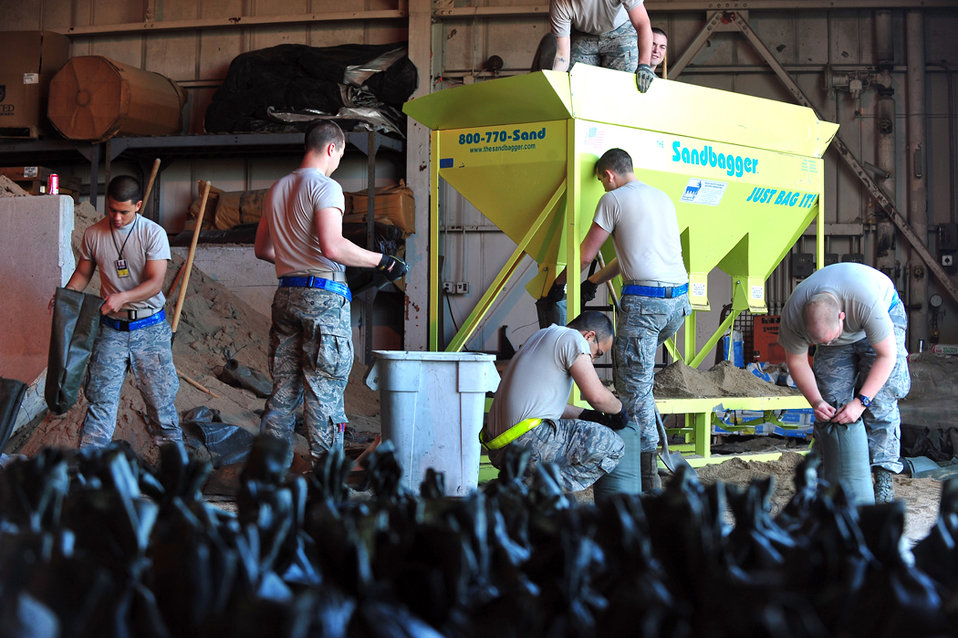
Minot Airmen fight flood

Airmen from Minot Air Force Base, N.D., fill sandbags June 22, 2011, to try and stop raising flood water from the Souris River. Later the river breached the levees and forcing the evacuation of more than 11,000 Minot residents.